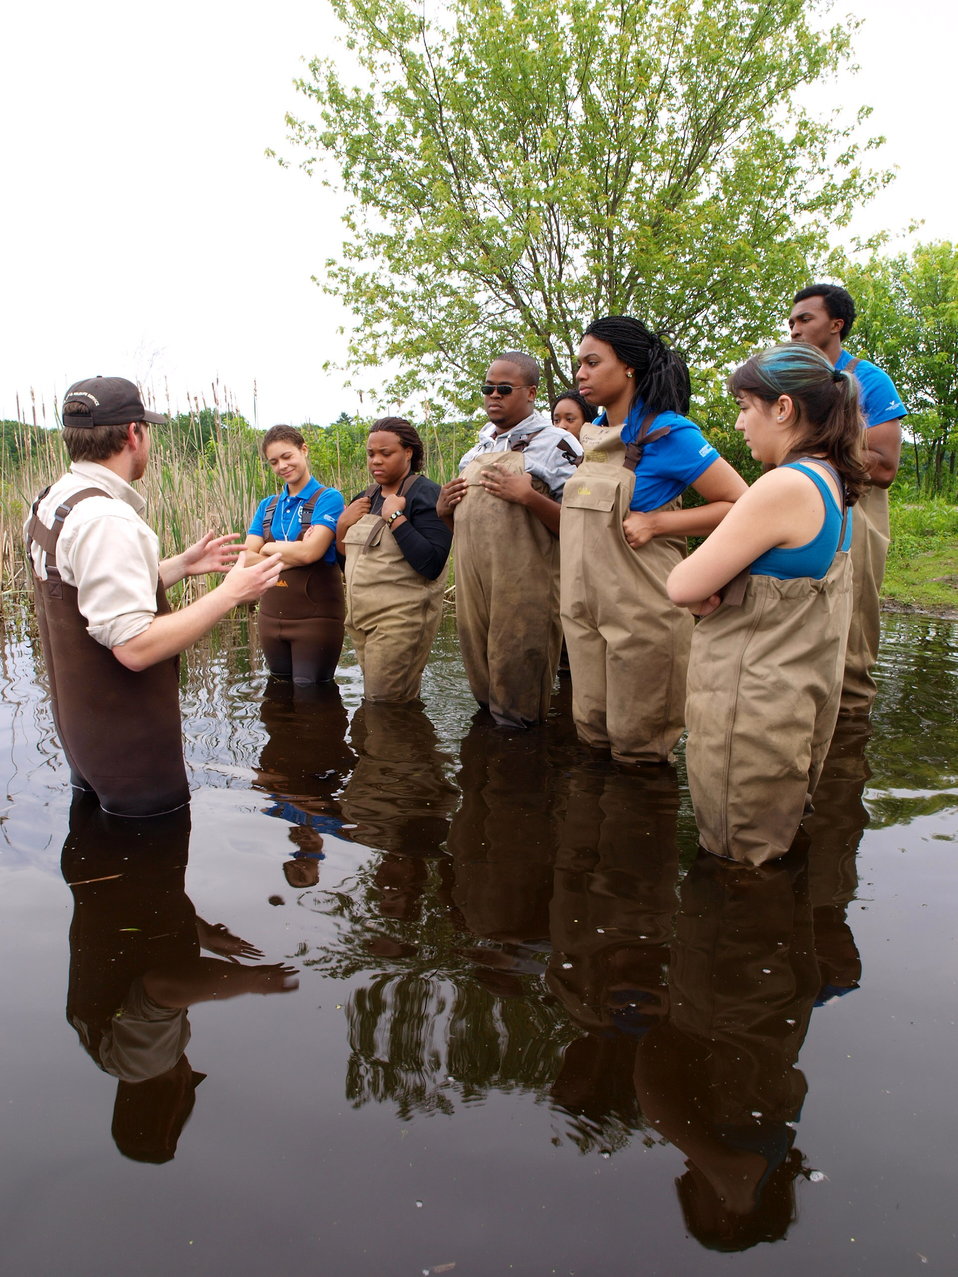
Biology Unit

For the Biology Unit, interns hopped into waders and one of the refuge biologists explained how they research and monitor Blanding's Turtles.